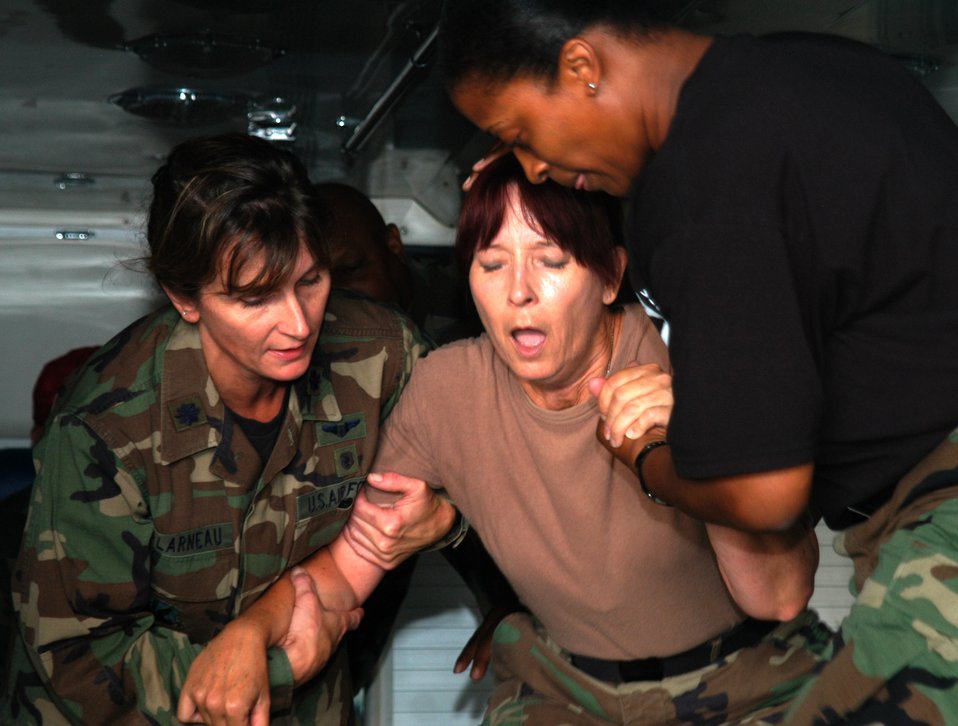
Joint disaster recovery exercise

Two Air National Guard medics help a